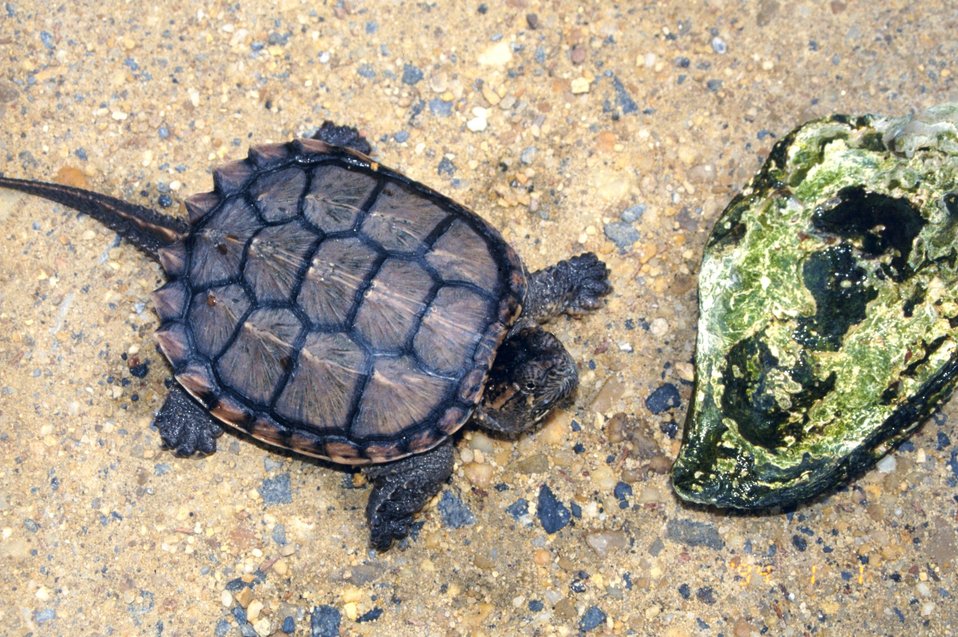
Young Alligator Snapping Turtle, Macroclemys temminckii.